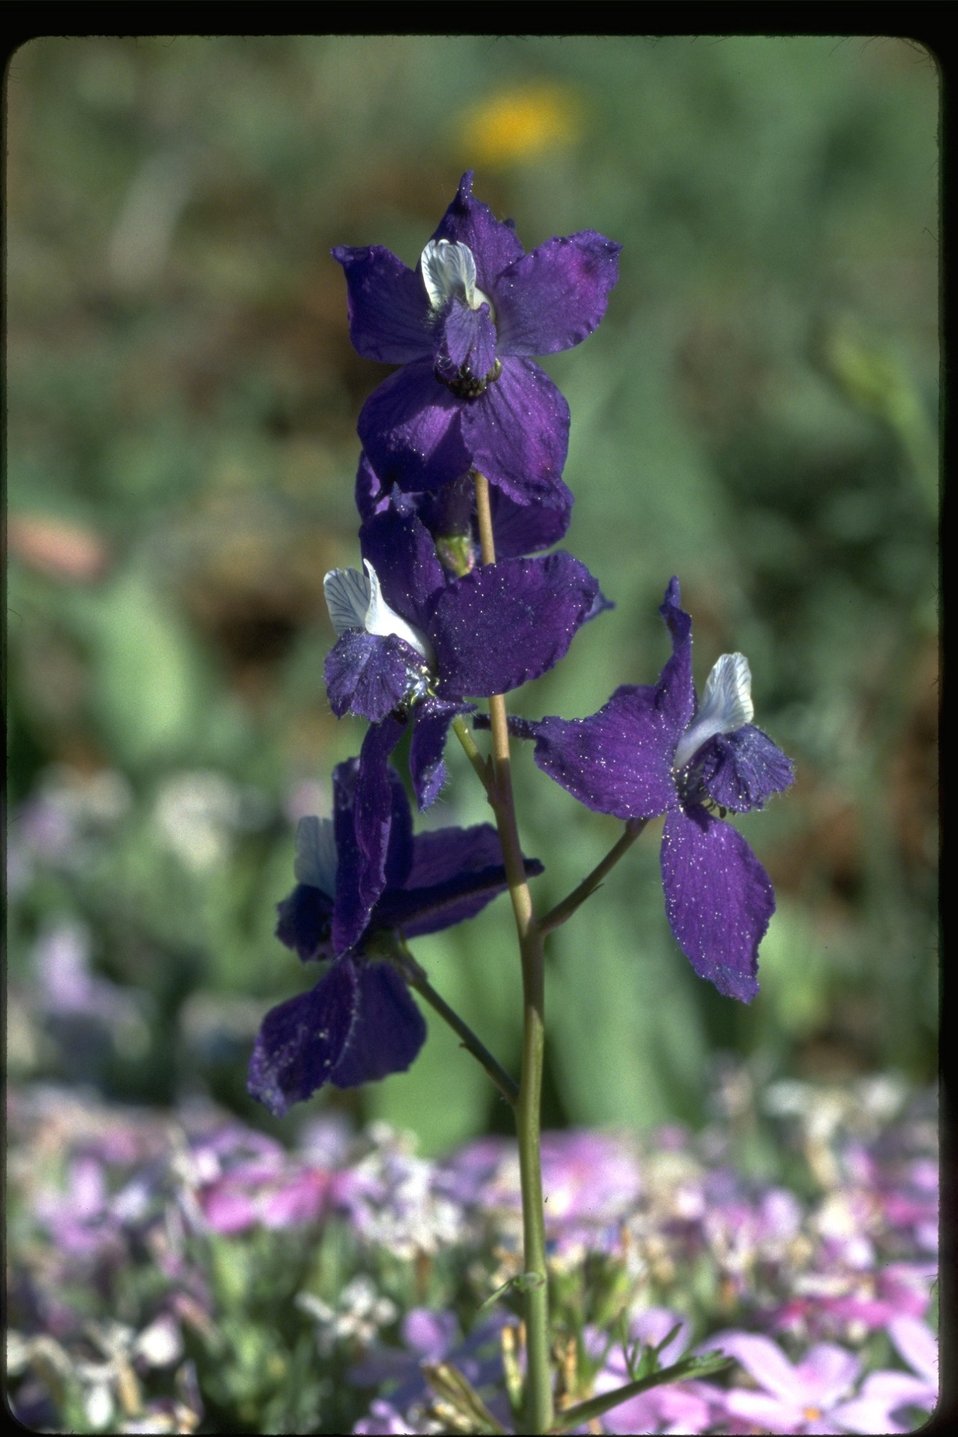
Medium shot of Delphinium/Larkspur wildflowers.